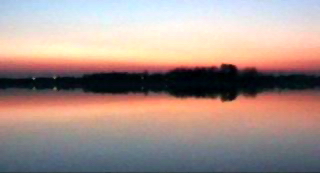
Palić lake at sunset. Bormalagurski 02:06, 27 October 2005 (UTC)